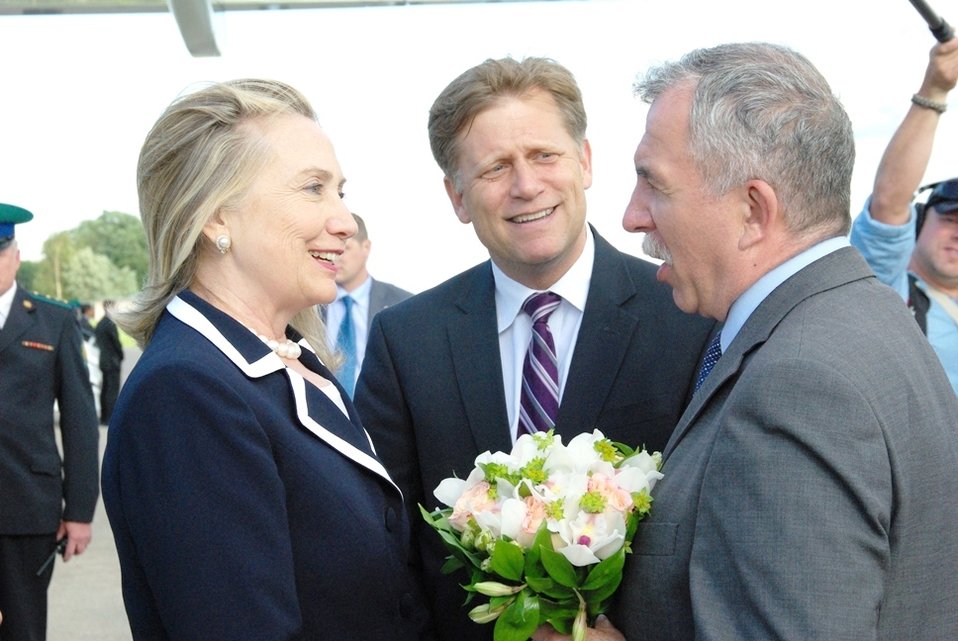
Secretary Clinton Is Greeted By Vice-Governor of St. Petersburg Markov

U.S. Secretary of State Hillary Rodham Clinton is greeted by Vice-Governor of St. Petersburg Oleg Markov as U.S. Ambassador to Russia Michael McFaul looks on, upon her arrival to St. Petersburg, Russia, on June 28, 2012.